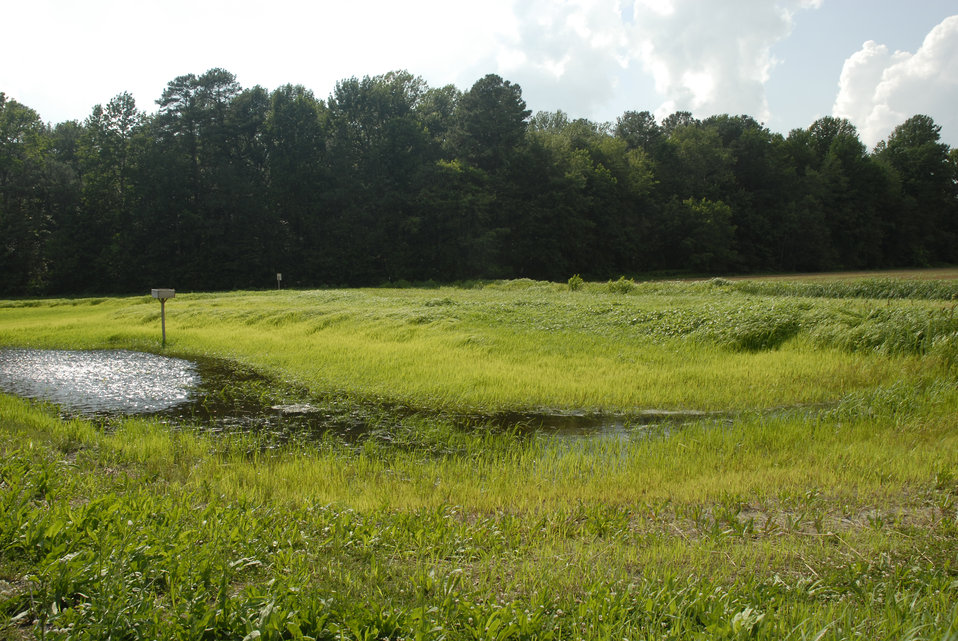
The U.S. Department of Agriculture (USDA) Natural Resources Conservation Service (NRCS) Conservation Effects Assessment Project (CEAP-Wetlands) study of the Chesapeake Bay concentrates on the ecological benefits of conserving wetland areas in Delaware on July 7, 2008. Wetlands provide significant ecosystem services that include floodwater storage, water quality improvement, biodiversity support, and wildlife habitat. Certain practices are aimed specifically at maintaining or restoring wetland ecosystem services.